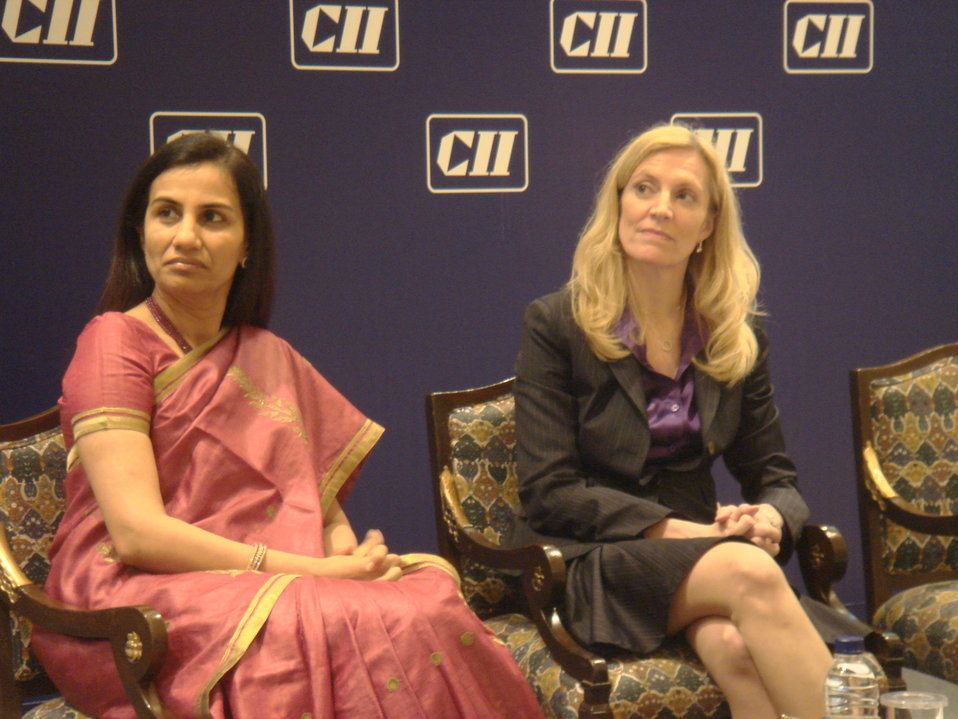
Lael Brainard's Visit to India

Under Secretary Lael Brainard at a Moderated Discussion Hosted by the Confederation of Indian Industry.